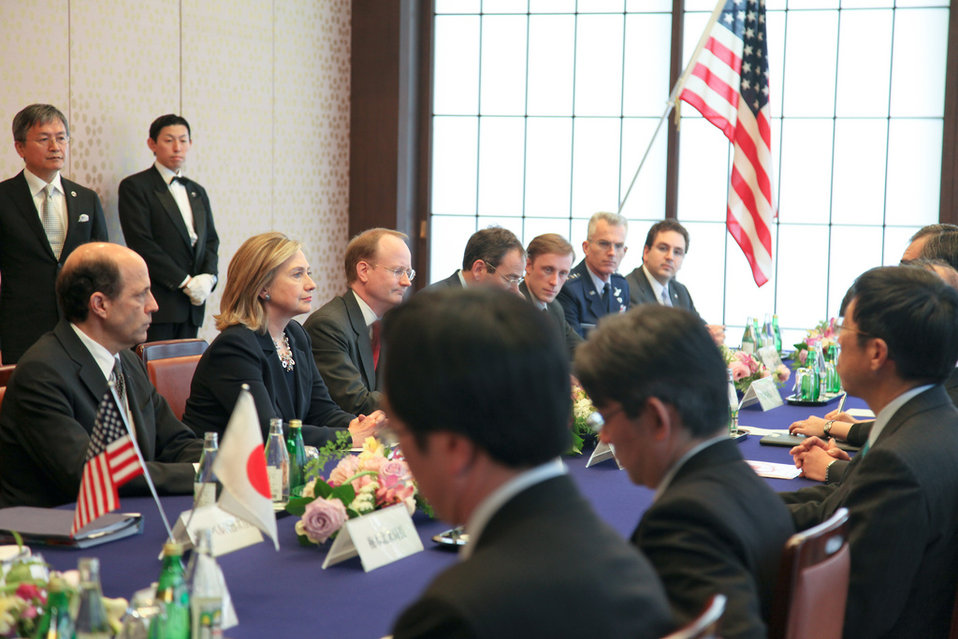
Secretary Clinton Holds a Bilateral Meeting With Japanese Foreign Minister Matsumoto

U.S. Secretary of State Hillary Rodham Clinton holds a bilateral meeting with Japanese Foreign Minister Takeaki Matsumoto at the Iikura Guest House in Tokyo, Japan, on April 17, 2011. Sitting to the Secretary's left is U.S. Ambassador to Japan John Roos.